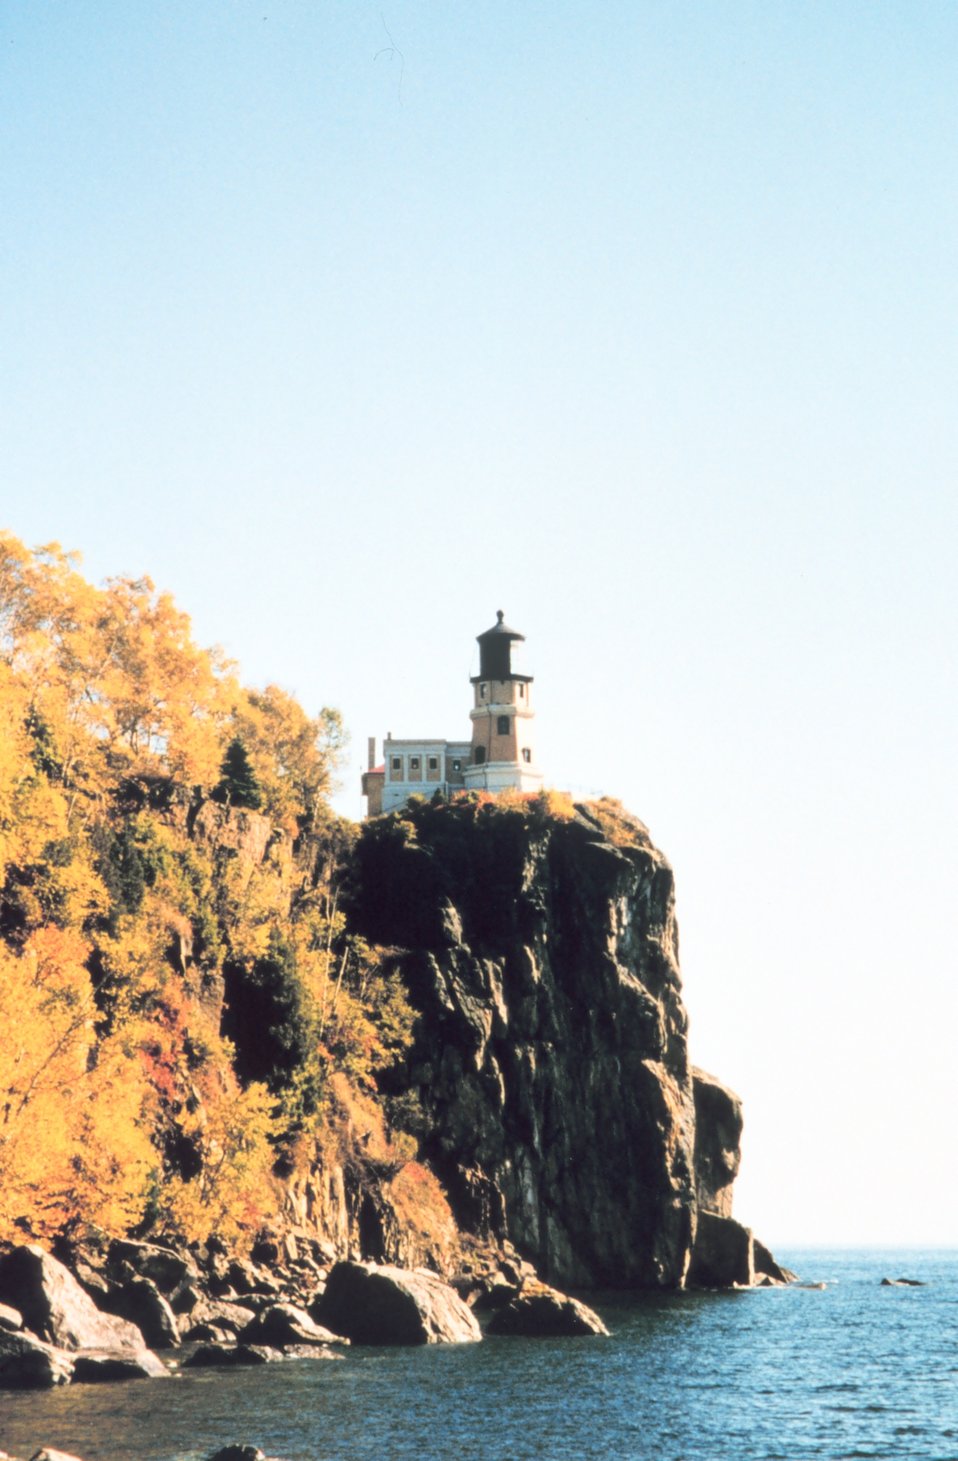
Split Rock Lighthouse State Park